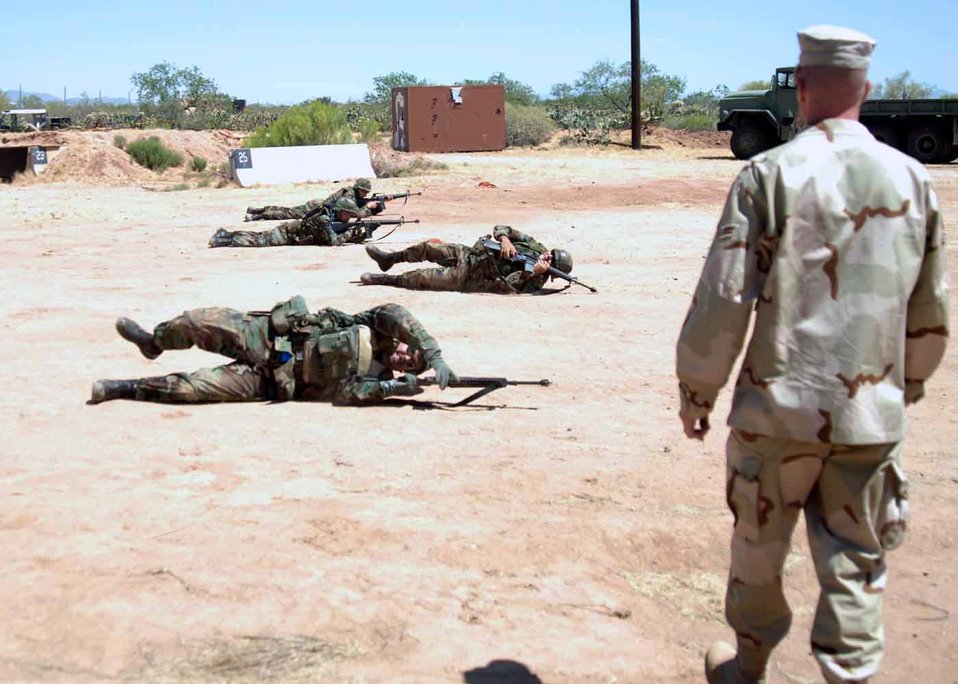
Contingency crawl

DAVIS-MONTHAN AIR FORCE BASE, Ariz. -- Airman 1st Class Jason Nelson watches Airmen perform various combat techniques during a deployment training class here. The training prepares Airmen for deployment and day-to-day life during contingency. Airman Nelson is assigned to the 355th Logistics Readiness Squadron.